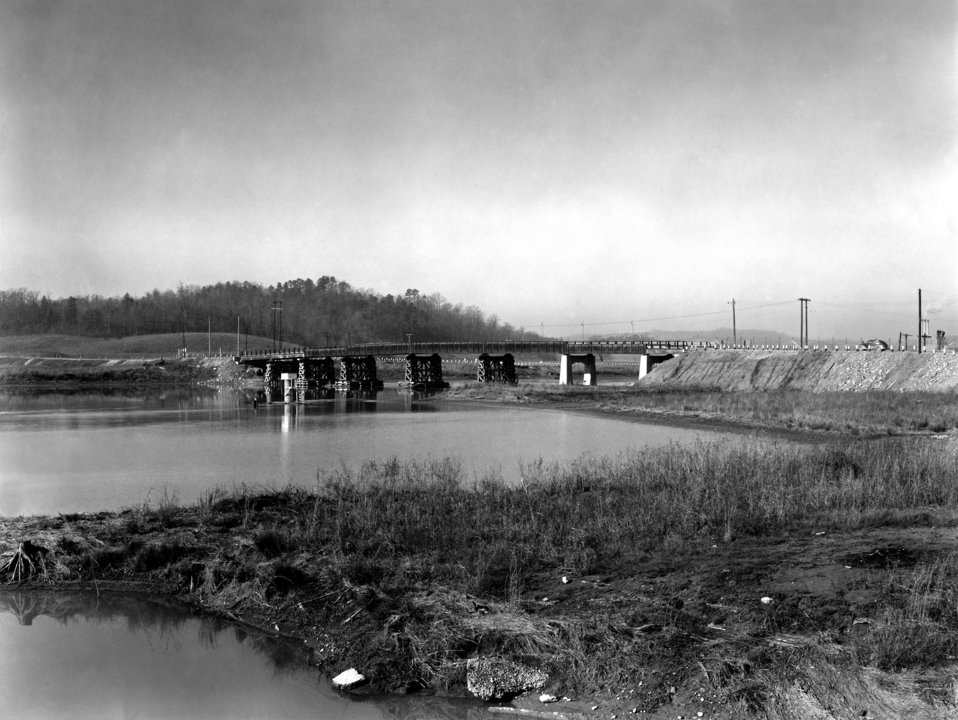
Gallaher Bridge Oak Ridge 1945

S-151 DOE photo Ed Westcott 1945 West entrance to Oak Ridge near K-25 plant Oak Ridge Tennessee